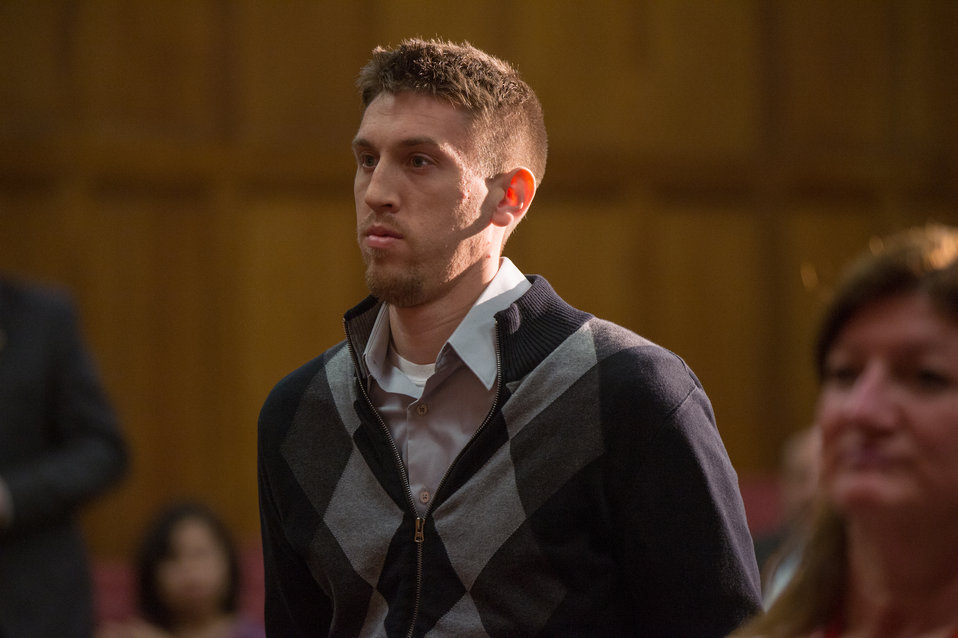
U.S. Department of Agriculture (USDA) Office of Communication's (OC) Timothy Hudak personnel who have served, or are serving in a Uniformed Armed Service are called by their past or present Service to stand and be honored with the singing of each of the major Service songs sung by soprano Amy Keesun Kwon, during the 2013 USDA Veterans’ Day Observance, whose theme is “VALOR, COURAGE, SACRIFICE – HONORING ALL WHO SERVED,” in Washington, D.C., on Wednesday, November 20, 2013.